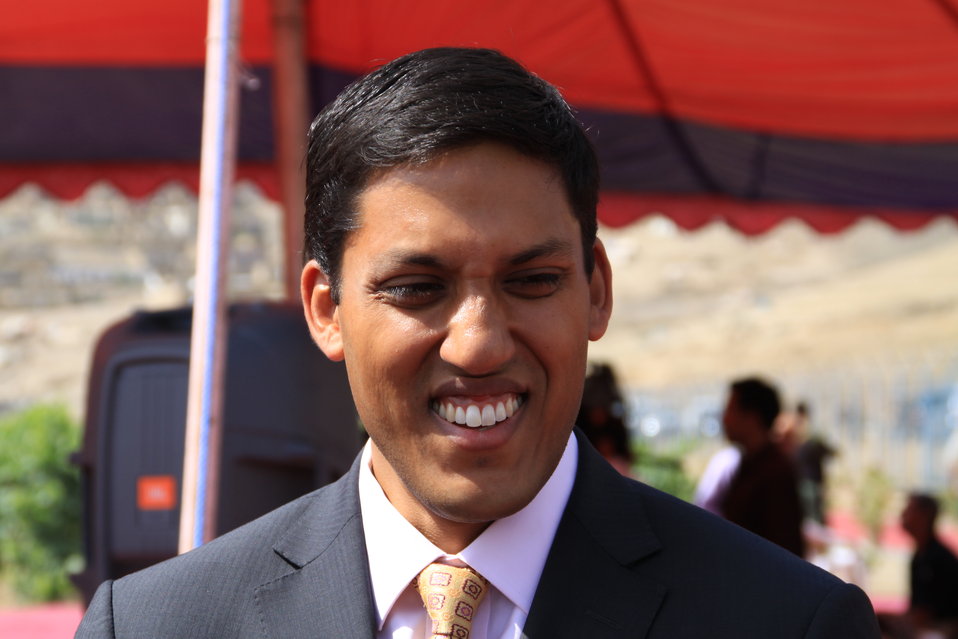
Badam Bagh Farm